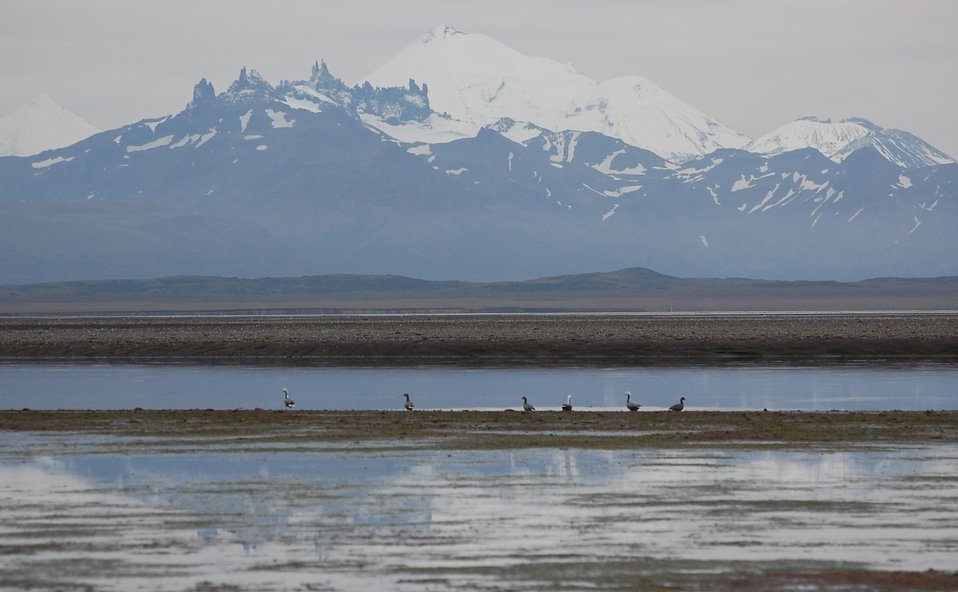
Emperor geese at Kinzarof Lagoon

Emperor Geese, Kinzarof Lagoon, Izembek National Wildlife Refuge